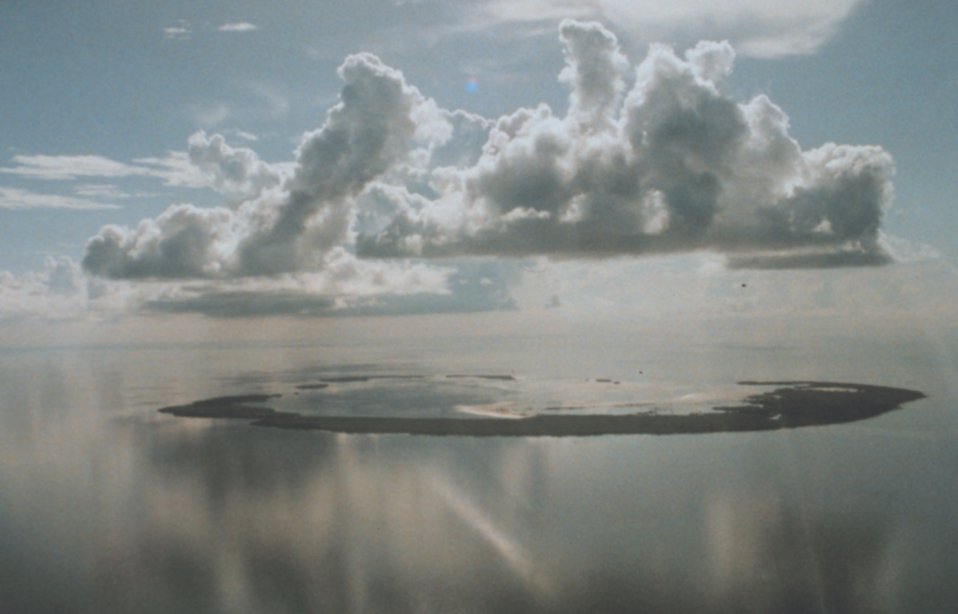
Cumulus building over the Florida Keys.